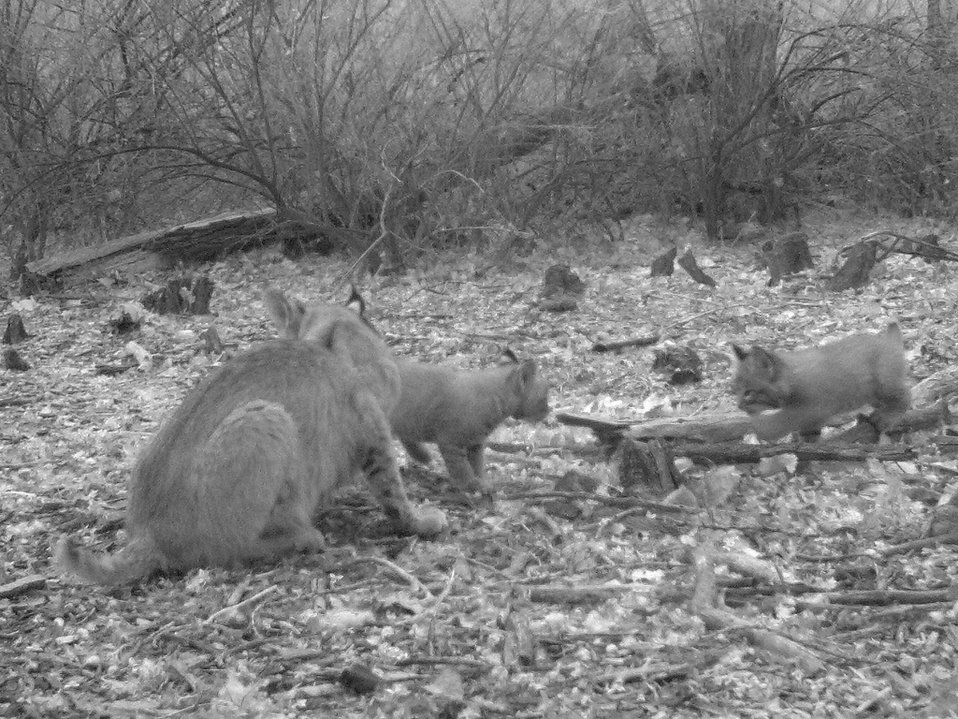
bobcat and kittens

Bosque del Apache National Wildlife Refuge, NM
Camera trap project by Matt Farley, Jennifer Miyashiro, and J.N. Stuart.